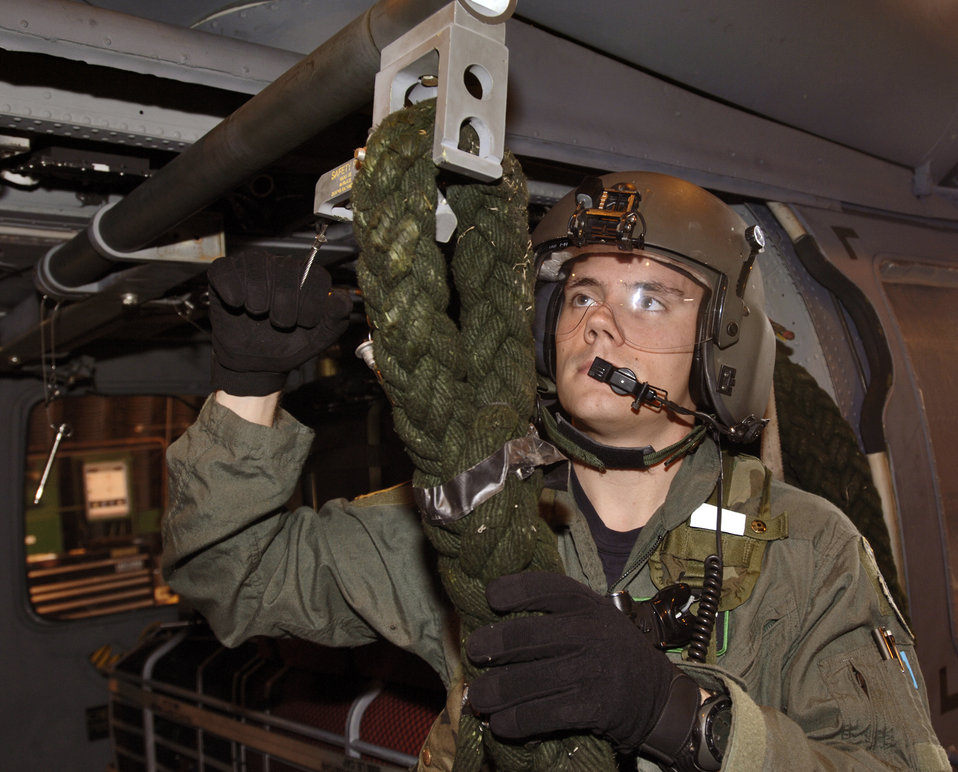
Rescue unit faces moving challenges

Senior Airman Calvin Paquette attaches a fast rope to an HH-60 Pave Hawk at Royal Air Force Lakenheath, England, on Aug. 2. The aerial gunner is with the 56th Rescue Squadron. The unit moved here from Keflavik Air Base, Iceland, in May.